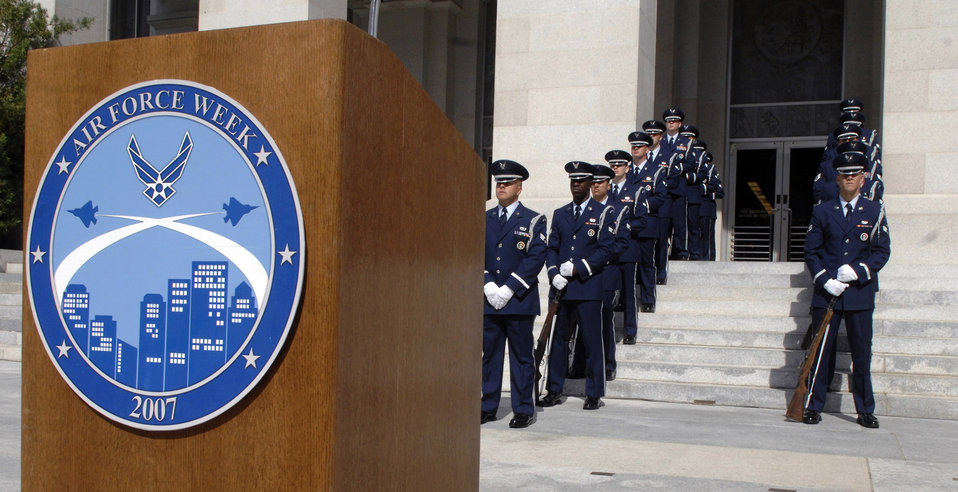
Air Force Week in California

An honor guard detail from Beale Air Force Base, Calif., stands ready June 4 moments before the start of the proclamation ceremony kicking-off Air Force Week-California in Sacramento, Calif. Air Force Week educates the public about the role of the Air Force in America's national defense.